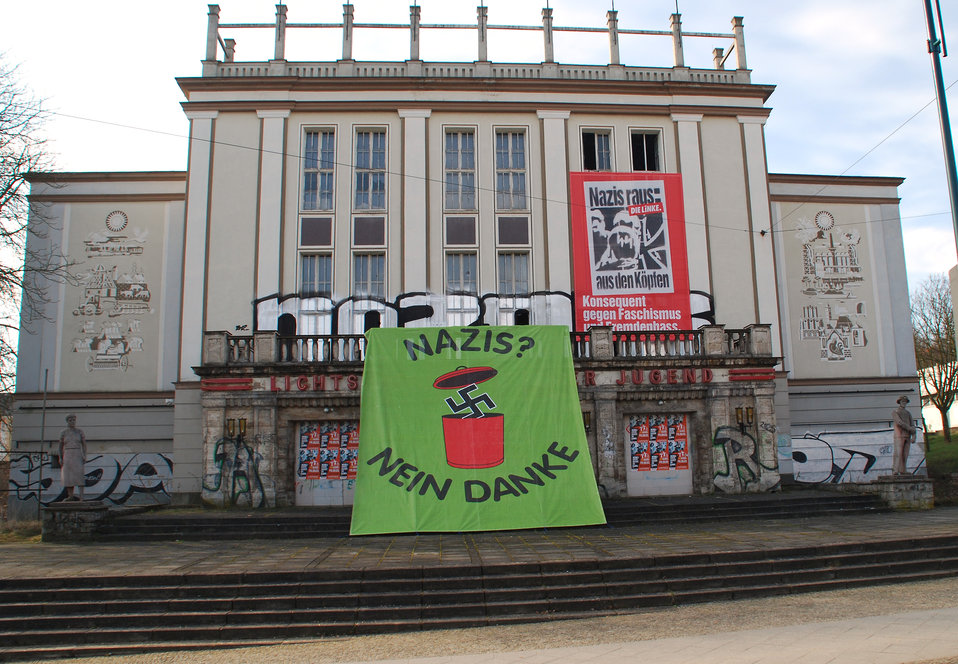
Proteste gegen den Nazi-Aufmarsch am 24.3.2012 in Frankfurt (Oder)